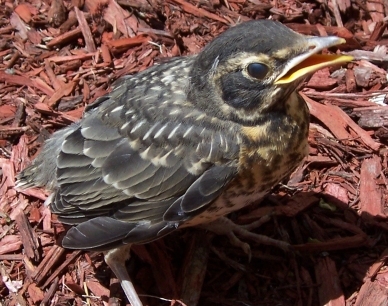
Baby American Robin